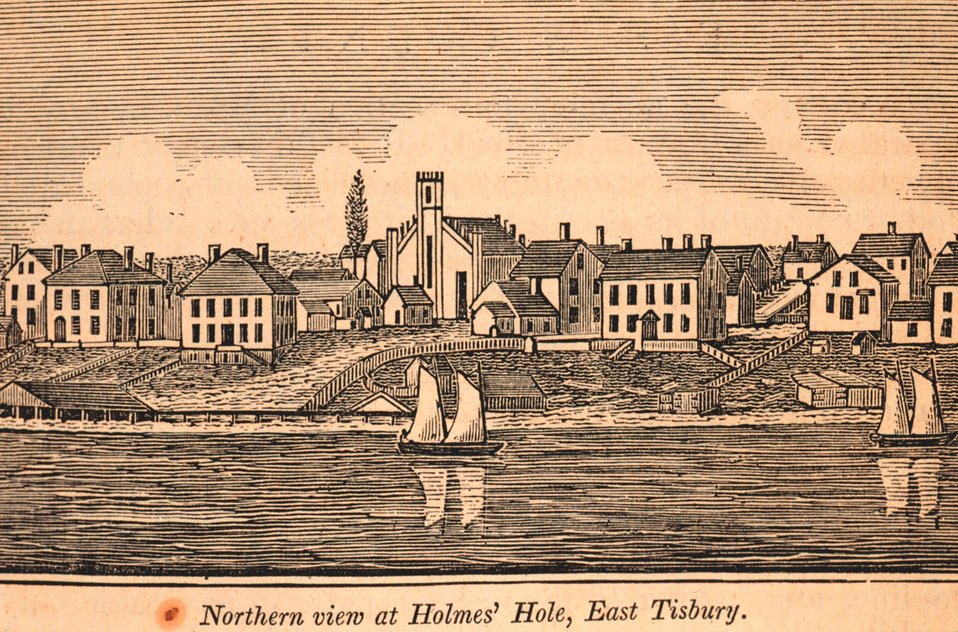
A northern view of Holmes' Hole, East Tisbury, on Martha's Vineyard. In: Historical Collections ... of Every Town in Massachusetts. 1841.